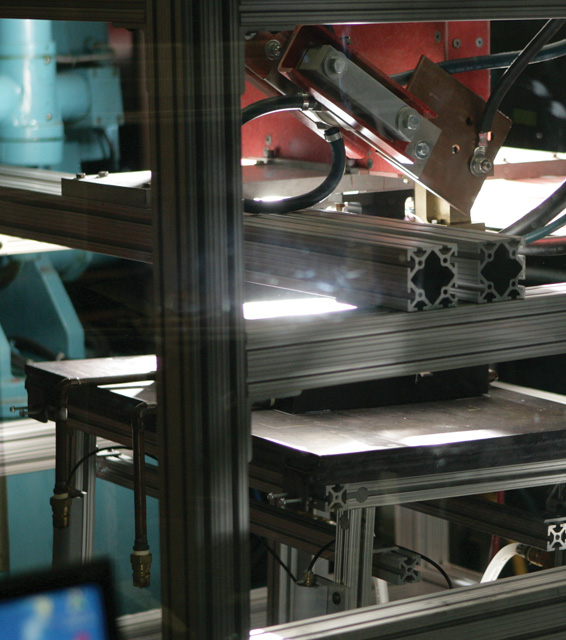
Solar Laser

In the late 1970s, Oak Ridge National Laboratory developed a laser processing technique to create silicon-based solar cells with efficiencies reaching 16%. By 1986, ORNL's single-crystal silicon (c-Si) solar cell fabricated with laser processing achieved a world record conversion efficiency of 19.5%. The record efficiency for c-Si solar cells today still stands at 24.7% as reported in 1998. Photo from Oak Ridge National Laboratory.